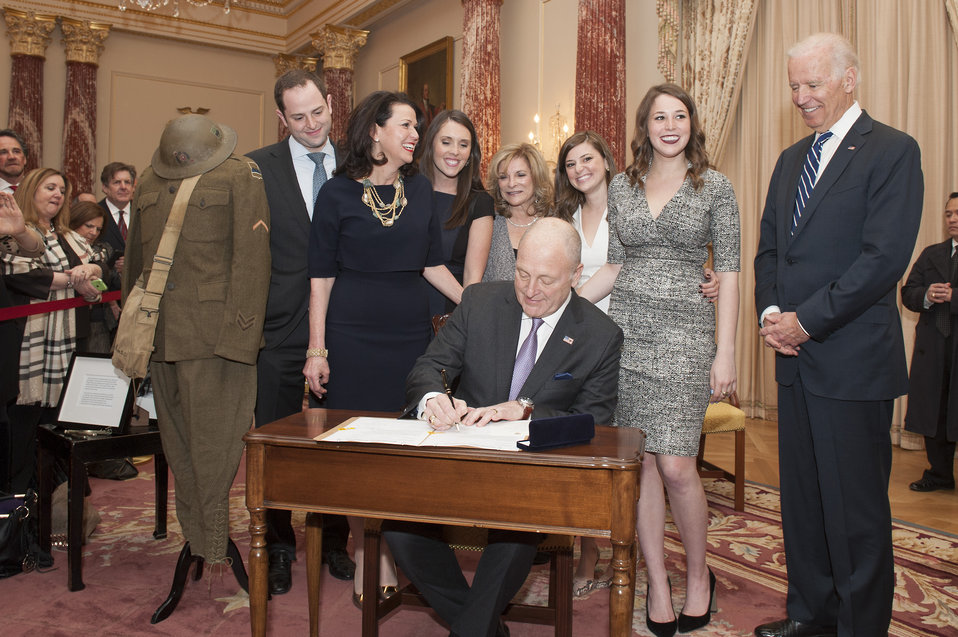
Bruce Heyman Signs His Papers to Become the U.S. Ambassador to Canada

With Vice President Joe Biden and his family looking on, Bruce Heyman signs his appointment papers to become the U.S. Ambassador to Canada at the U.S. Department of State in Washington, D.C., on March 26, 2014.